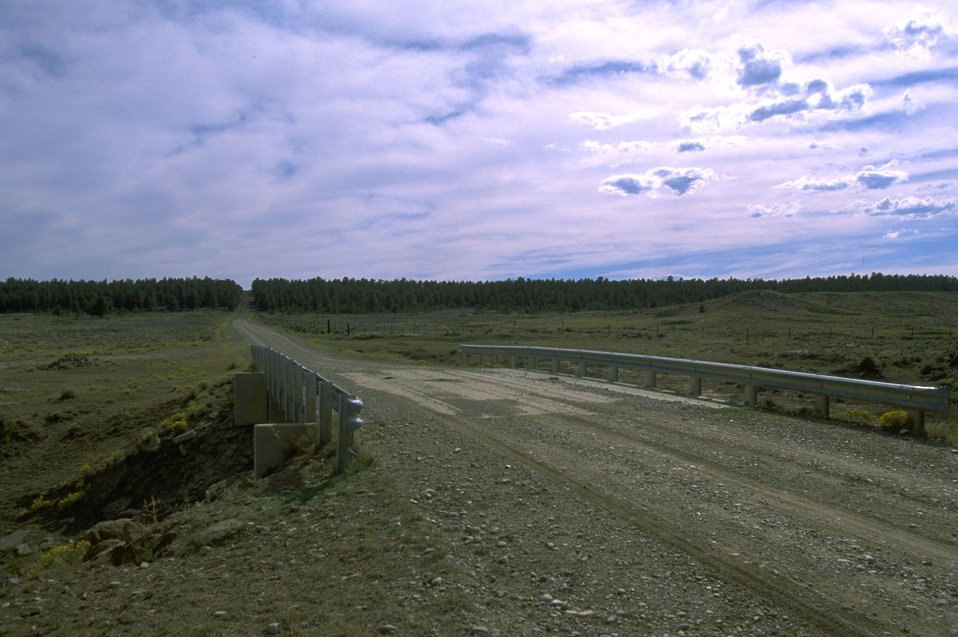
Acid Shale Area of Critical Environmental Concern (ACEC)